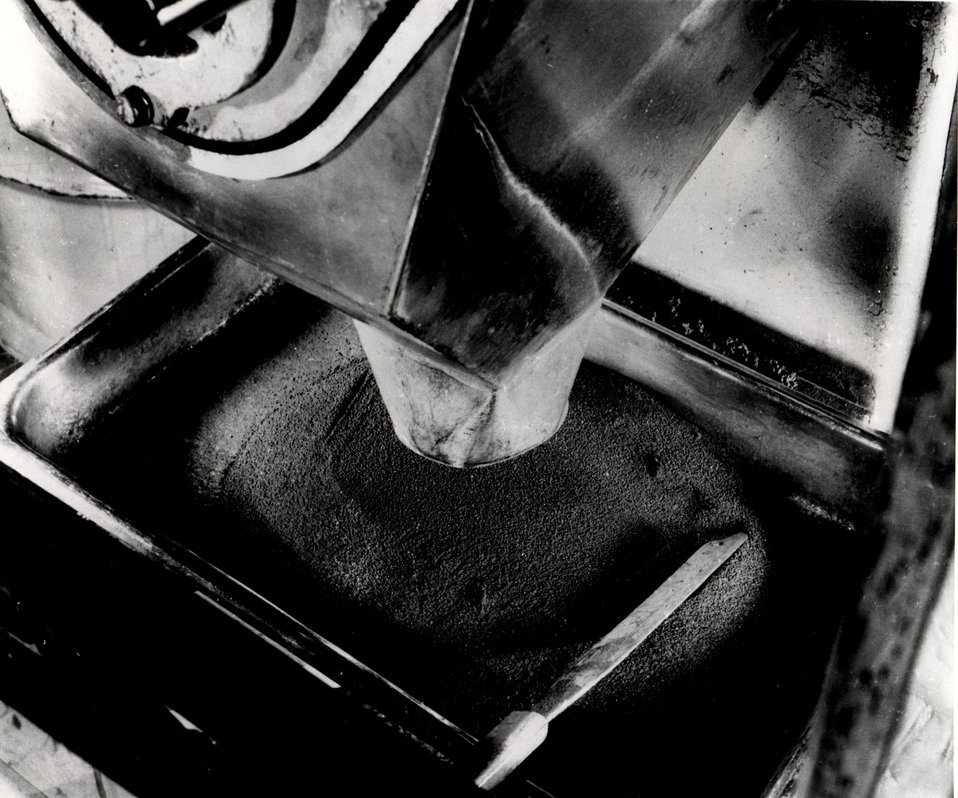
Close-up view of one of the principal steps in fabrication of fuel elements for water-cooled reactors. c. 1964